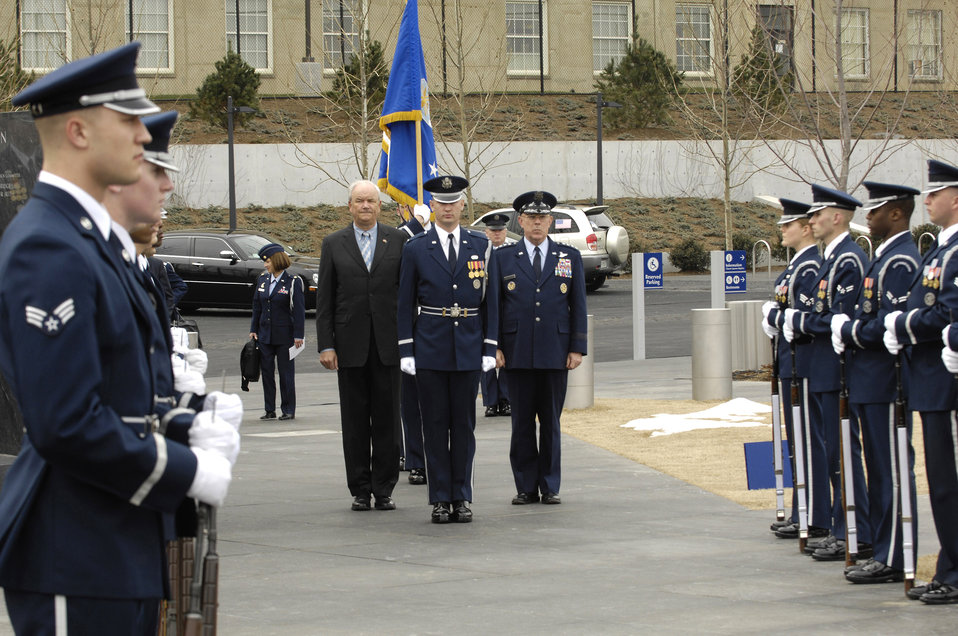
Air Force 60th Anniversary flag raised at memorial

Secretary of the Air Force Michael W. Wynne and Air Force Chief of Staff Gen. T. Michael Moseley are escorted to the base of the Air Force Memorial in Arlington, Va., March 1 for a ceremony in which the Air Force's 60th Anniversary flag was unveiled. The flag will fly at the Air Force memorial until the Air Force's 60th birthday on Sep 18.